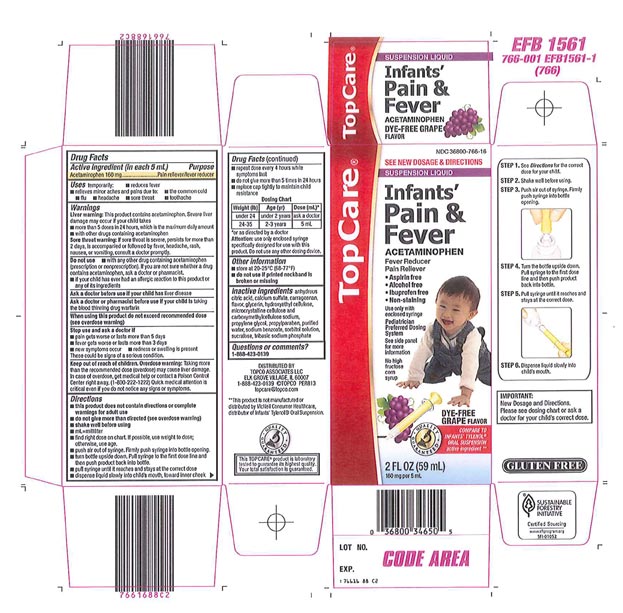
Recalled - Acetaminophen infant suspension liquid

November 1, 2013 – Product Recall – Perrigo Initiates Nationwide Voluntary Product Recall of Acetaminophen Infant Suspension Liquid, 160 Mg/5 Ml, Due to a Potential Defect with the Co-packaged Oral Syringe.